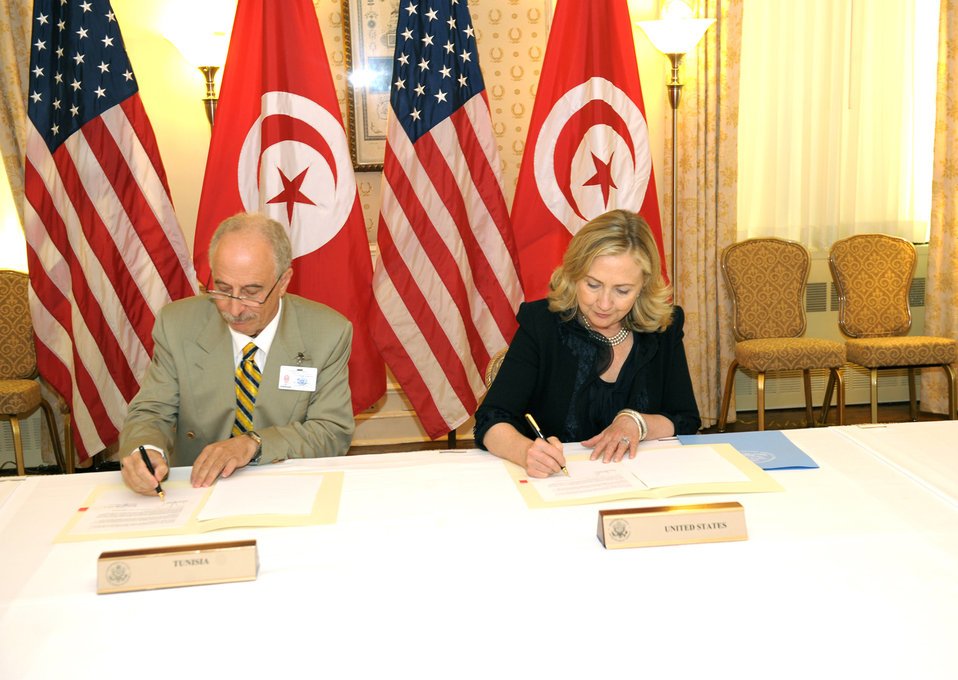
Secretary Clinton and Tunisian Foreign Minister Kefi Participate in a Signing Ceremony

U.S. Secretary of State Hillary Rodham Clinton holds a bilateral meeting and signing ceremony with Tunisian Foreign Minister Kefi, at the Waldorf-Astoria Hotel in New York, New York, on September 22, 2011.